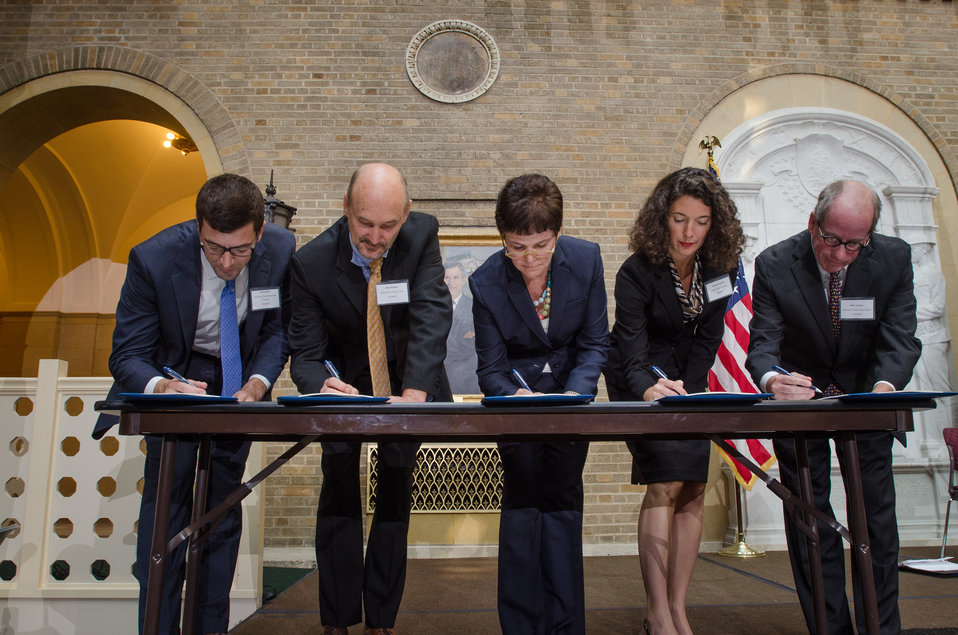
U.S. Department of Agriculture (USDA) Bioenergy Memorandum of Understanding, is signed by wood energy partners (left - right) Biomass Thermal Energy Council, Executive Director Joseph Seymour; Alliance for Green Heat, President John Ackerly, USDA Deputy Agriculture Secretary Krysta Harden; Pellet Fuels Institute Executive, Director Jennifer Hedrick; Biomass Power Association, President and CEO Bob Cleaves, at the USDA Headquarters, in Washington, D.C., on Wednesday, September 11, 2013.
The partnership agreement focuses on promoting wood energy nationwide as a means to address fire risks, bolster rural economic development, improve air quality, and help meet the Obama Administration’s renewable energy and energy efficiency goals. These organizations support the use of wood energy across the scale of users – from residential users, to commercial and intuitional facilities, to industrial production of heat and or electricity to drive businesses and feed the electrical grid.
Under the terms of the five grants announced by Deputy Secretary Harden, private, state and federal organizations will work together to stimulate the development of additional wood energy projects in their states. Collectively, $2.9 million will be spent o this effort -- $1.1 million on federal funds and $1.8 million in non federal funds. For more information o0n the cooperative agreement program, visit na.fs.fed.us.werc/wood-energy/ USDA Photo by Lance Cheung.